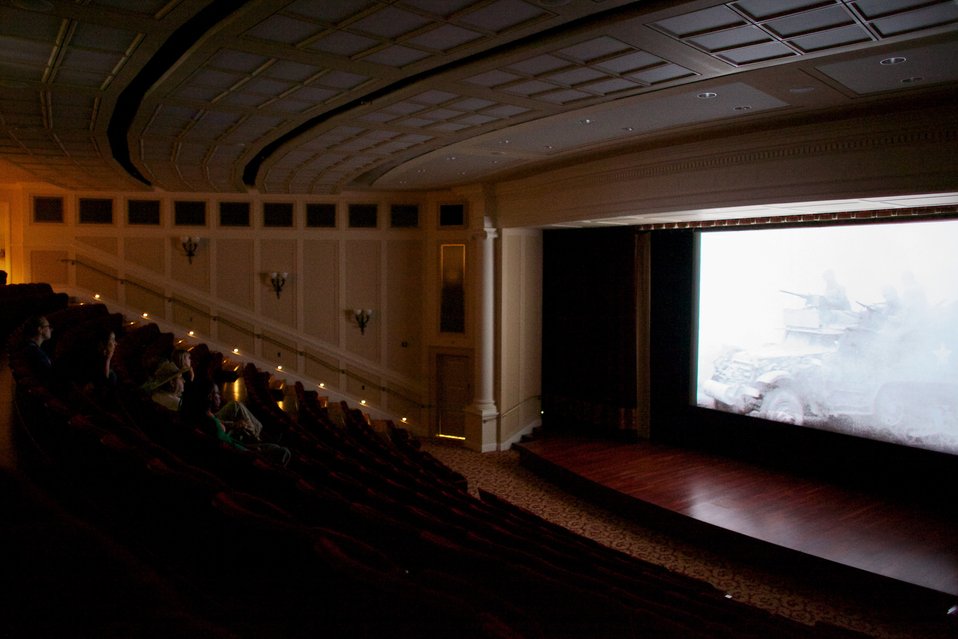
Jennifer Boulin and Motion Picture Lab staff Criss Kovac, Heidi Holmstrom, Harry Snodgrass, Yehoshua Yungshten, and Audrey Amidon preview digitized World War 2 film they had restored; Location: Archives 1 - McGowan Theater, Washington , D.C.